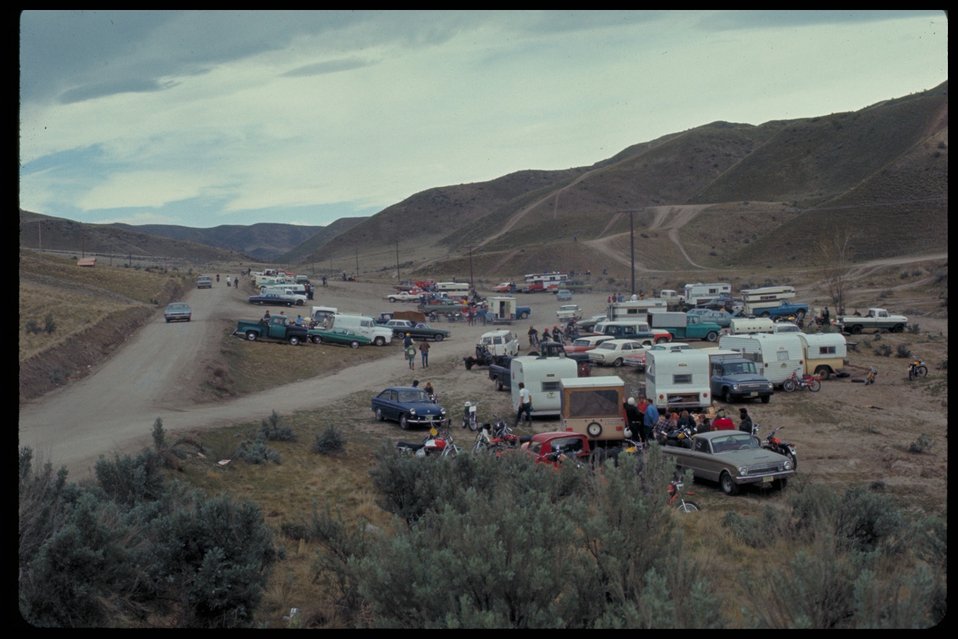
Motorcycle races Little Gem Park Boise Front OHV Off Highway Vehicles Four Rivers Field Office LSRD Lower Snake River District